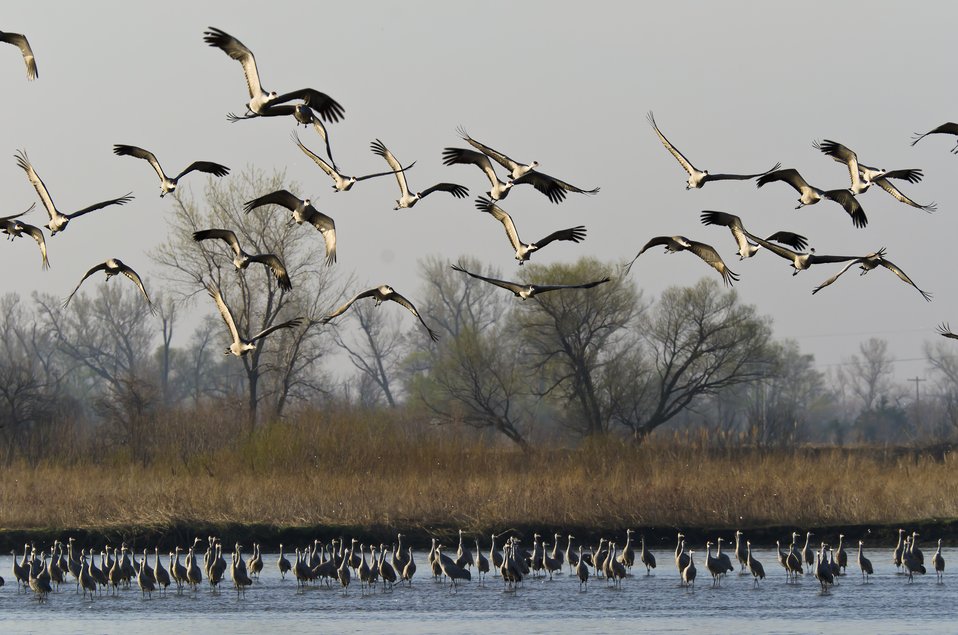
Sandhill Migration on the Platte River

Every year, hundreds of thousands of sandhill cranes congregate on the Platte River during their Spring migration, forming large flocks that use the sandbars of the Platte River as a nightime refuge before dispersing to local fields to feed during the day

Credit: Larry Crist / USFWS

Photo Contest Entry #153